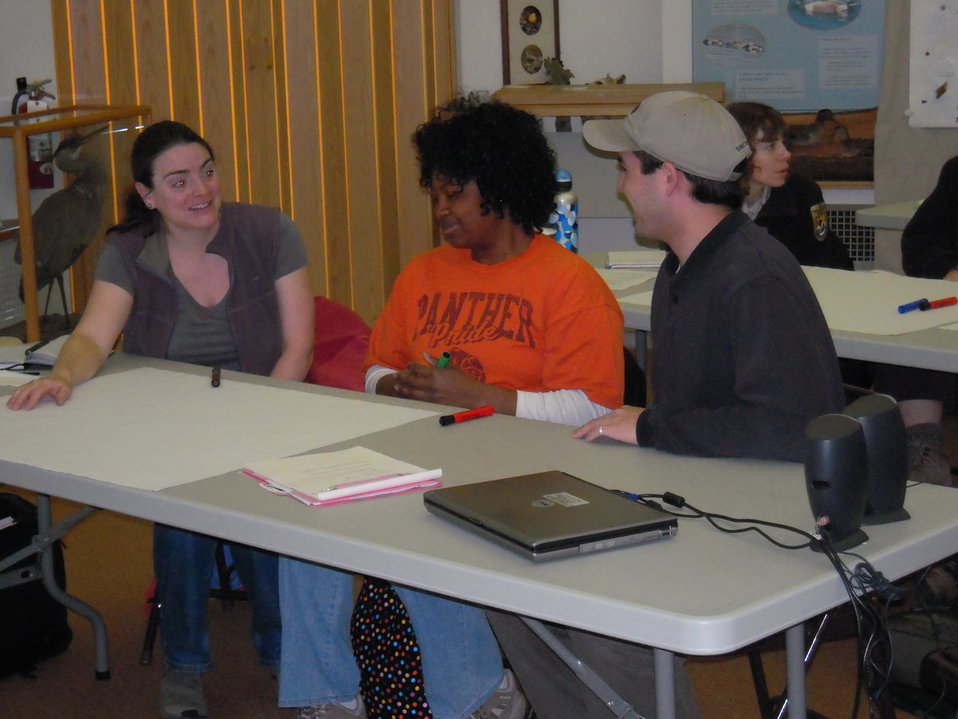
Salt Marsh workshop

Discussion at the Salt Marsh workshop.